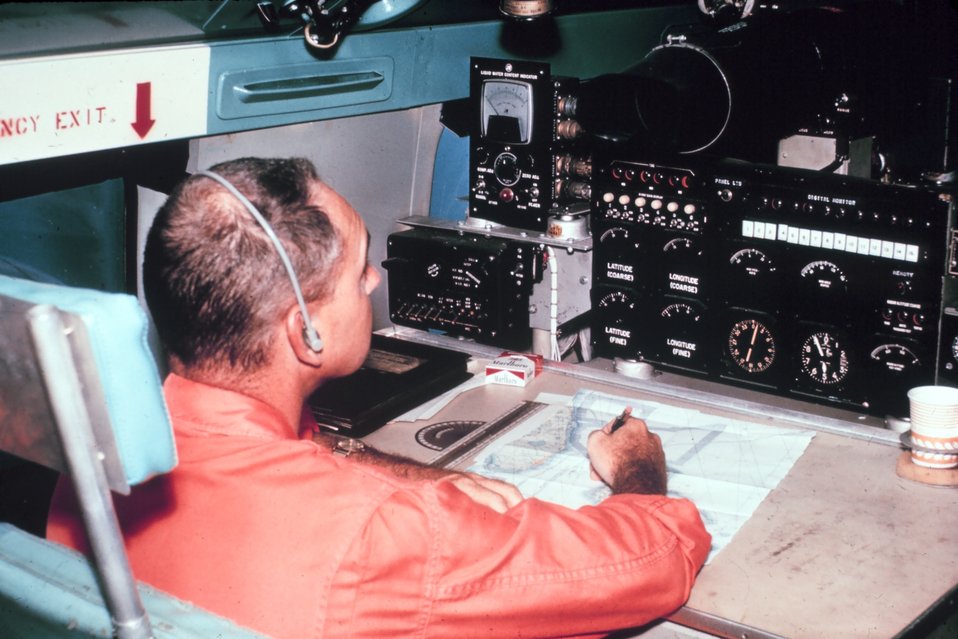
Flight meteorologist.